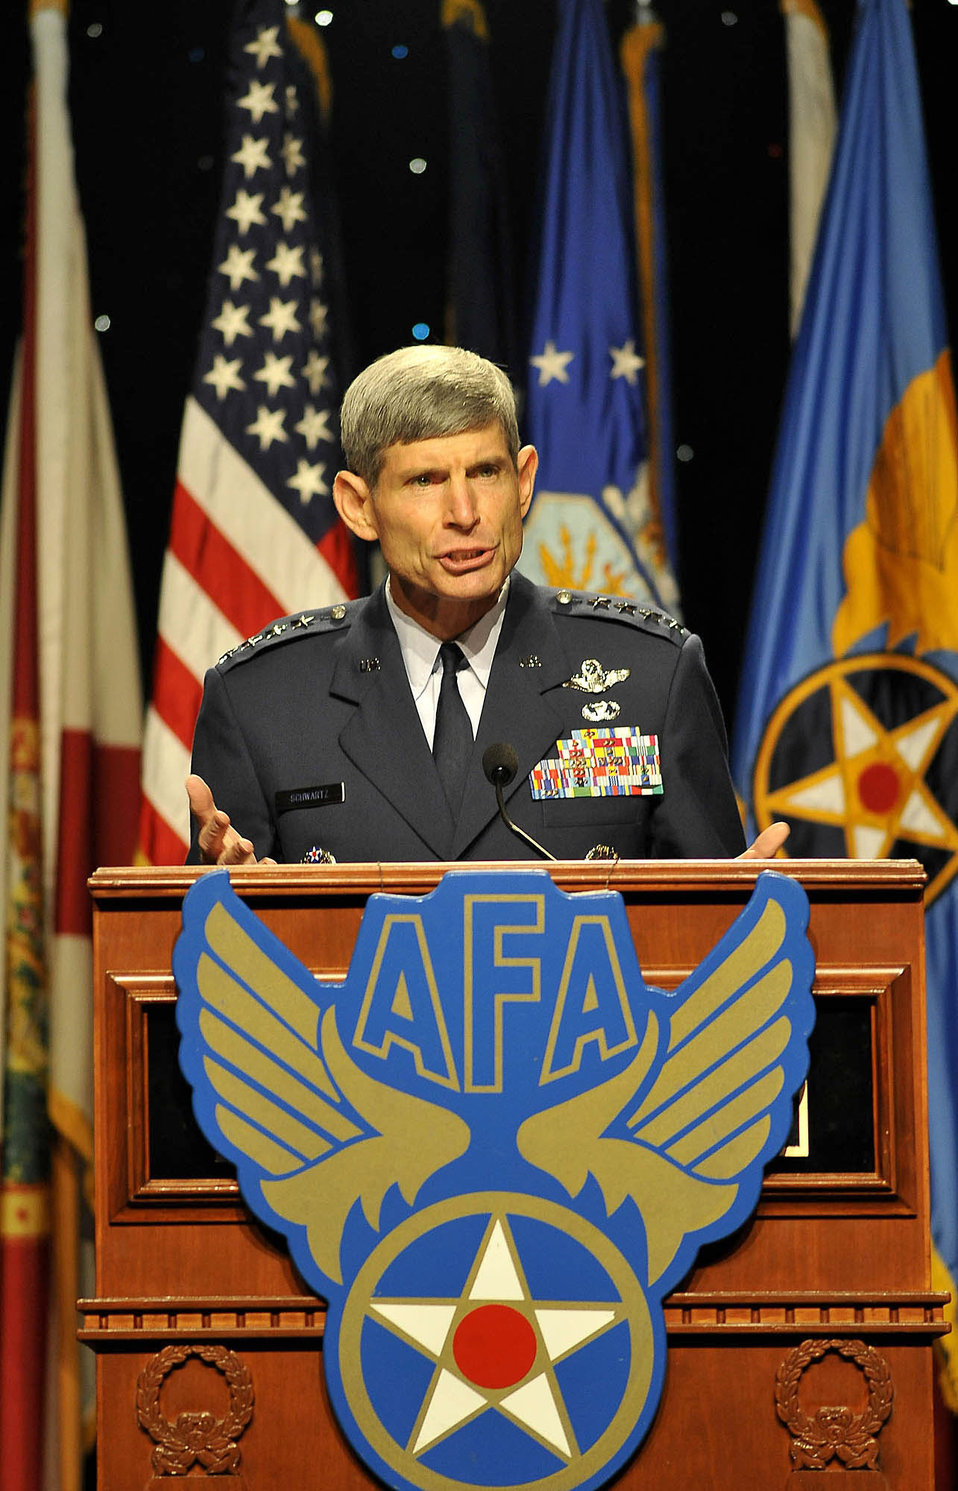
General Schwartz kicks off AFA convention

Air Force Chief of Staff Gen. Norton A. Schwartz presents opening remarks at the 2008 Air Force Association Air & Space Conference and Technology Exposition Sept. 15, in Washington D.C.